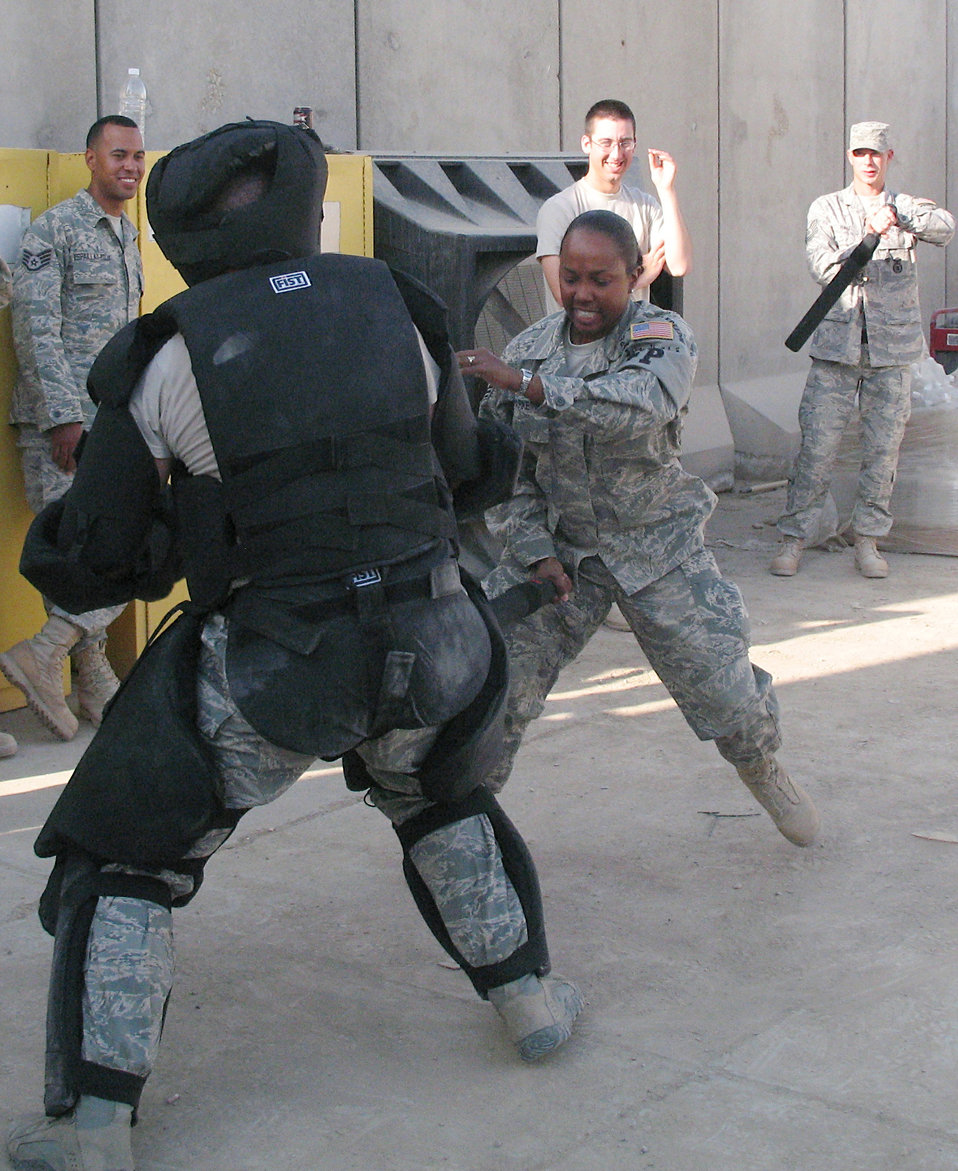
Force protection Airmen learn to use another tool

Senior Airman Shannon Parker uses nonlethal force to control an